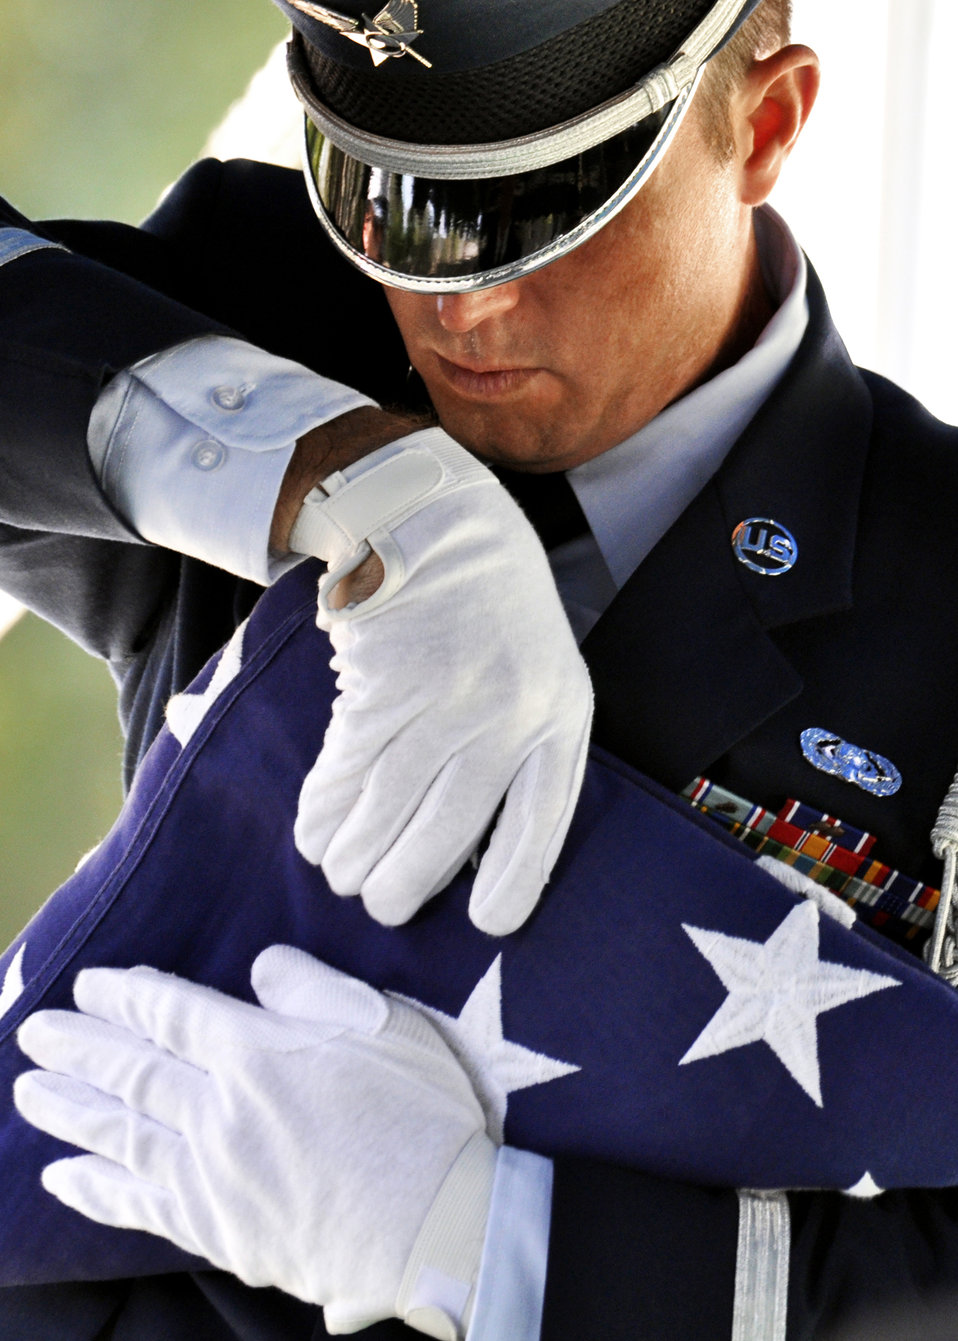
Practice makes perfect

Staff Sgt. John Horgos, a member of the honor guard at Eglin Air Force Base, Fla., adjusts the folds of the flag during a mock funeral as part of the honor guard class graduation Sept. 3, 2010. Eglin's honor guard leaders hold four classes per year with 15 Airmen graduating in this particular class.